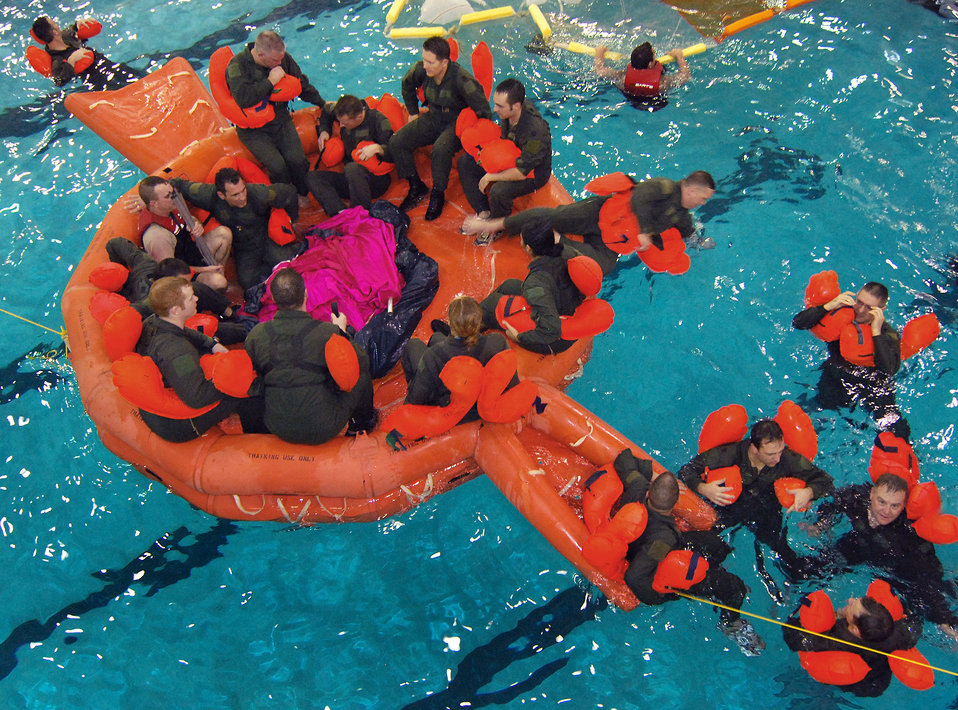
Water survival training

Aircrew members from the 94th Airlift Wing receive instruction on the use of a 20-person life raft during water survival training Feb. 4, 2011, at the Cobb Aquatic Center in Marietta, Ga.